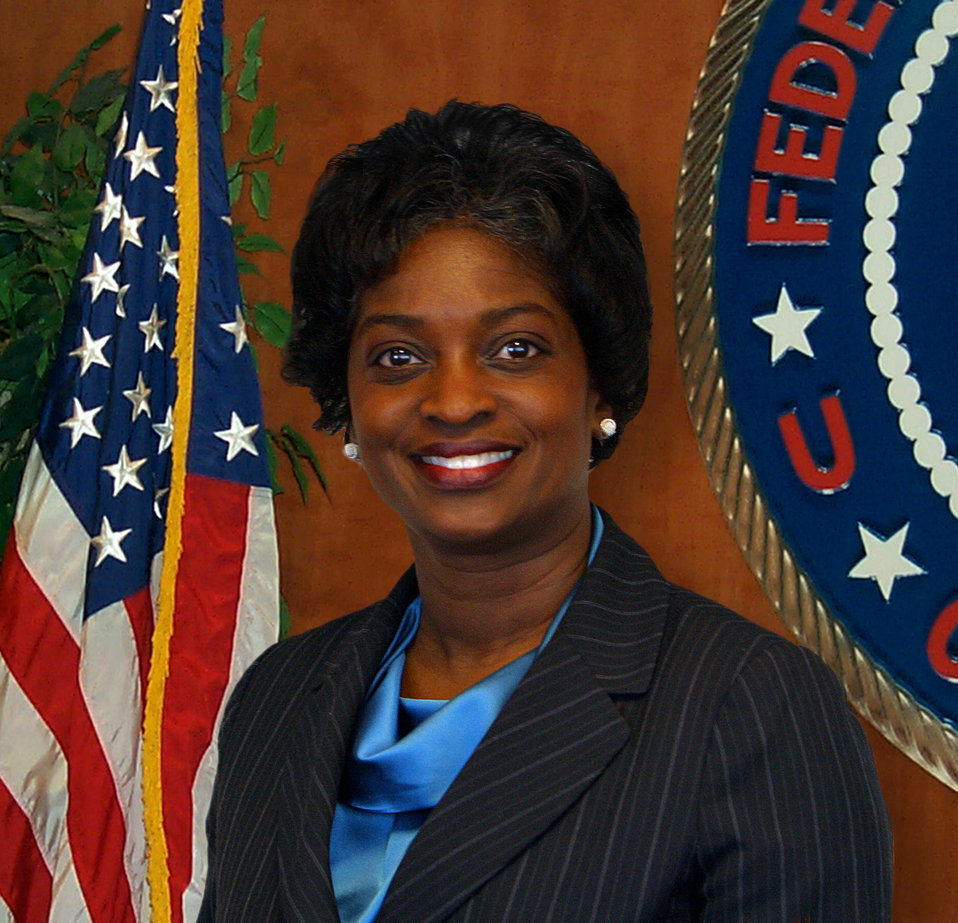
Commissioner Mignon Clyburn